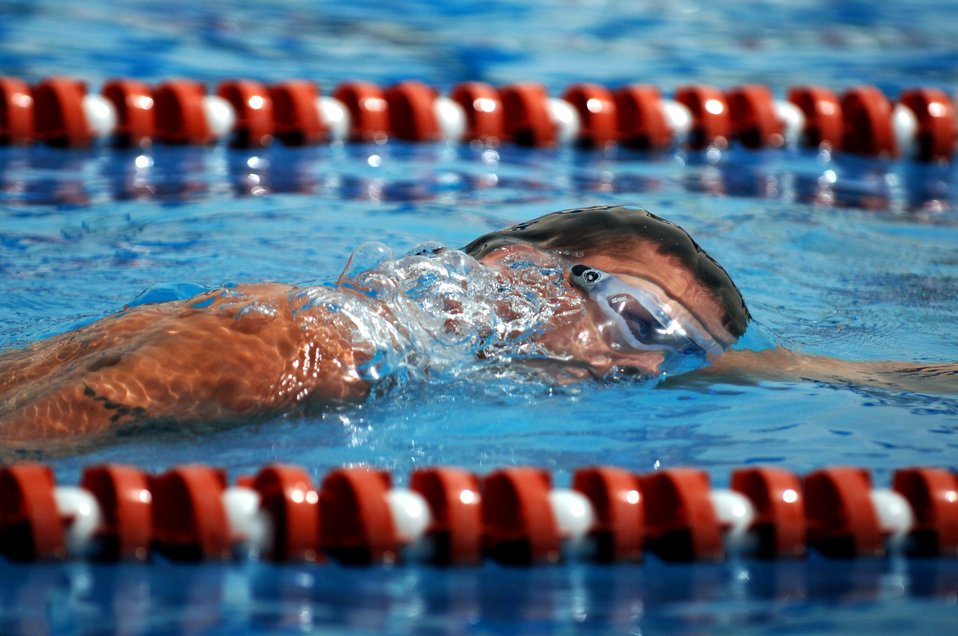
Wing sports day

An Airman swims in the 1,600-meter relay during the 379th Air Expeditionary Wing Sports Day on Sunday, April 23, 2006. Other events at the deployed location in Southwest Asia included volleyball, home run derby, basketball, dodgeball, and a